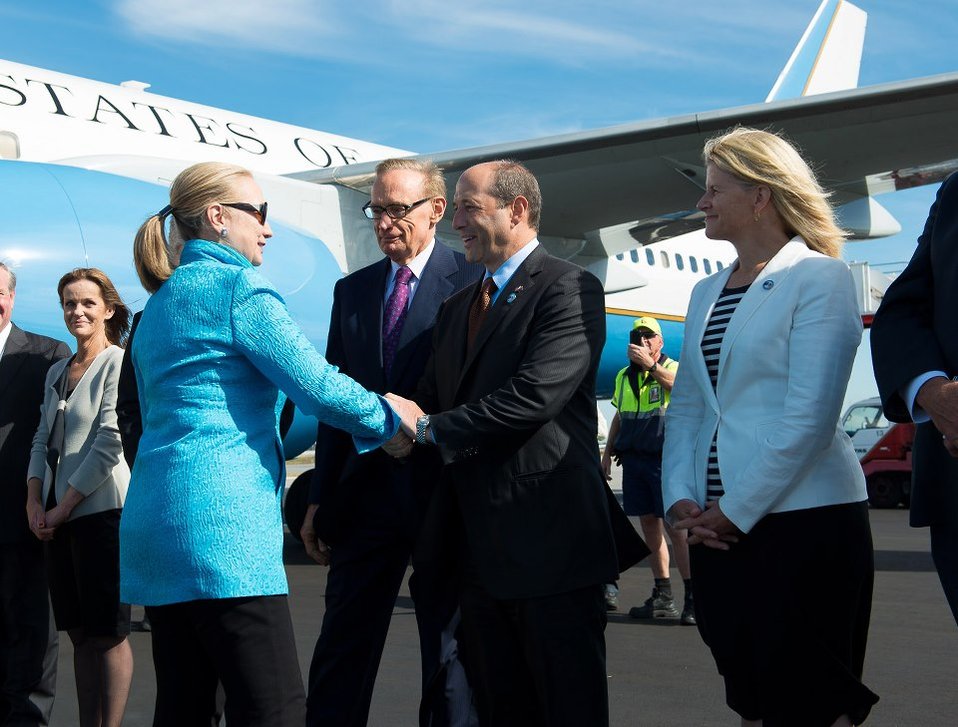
Secretary Clinton Is Greeted By Ambassador Bleich

U.S. Secretary of State Hillary Rodham Clinton is greeted by U.S. Ambassador to Australia Jeff Bleich and his wife Mrs. Becky Bleich, center, upon arriving in Perth, Australia, November 12, 2012. Also pictured is Australian Foreign Minister Robert Carr, left of Ambassador Bleich. [U.S. Embassy in Canberra, Australia photo by Travis Longmore/ Public Domain]